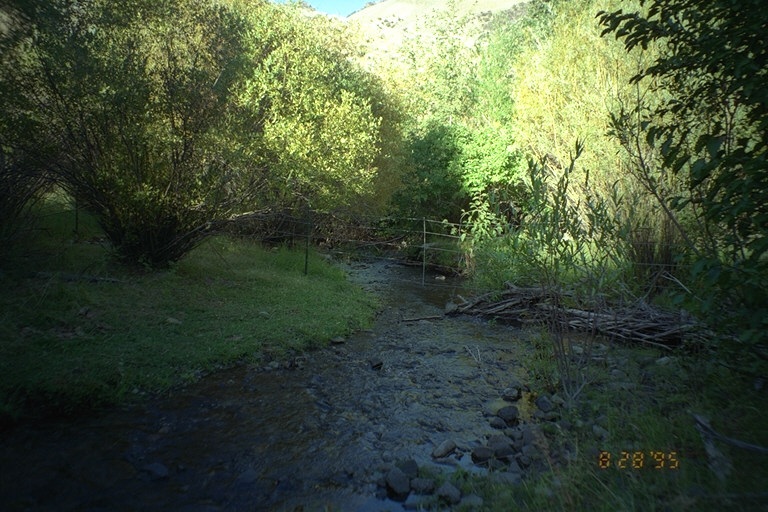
Riparian area Public Lands Salmon Field Office UCSC Upper Columbia Salmon Clearwater District